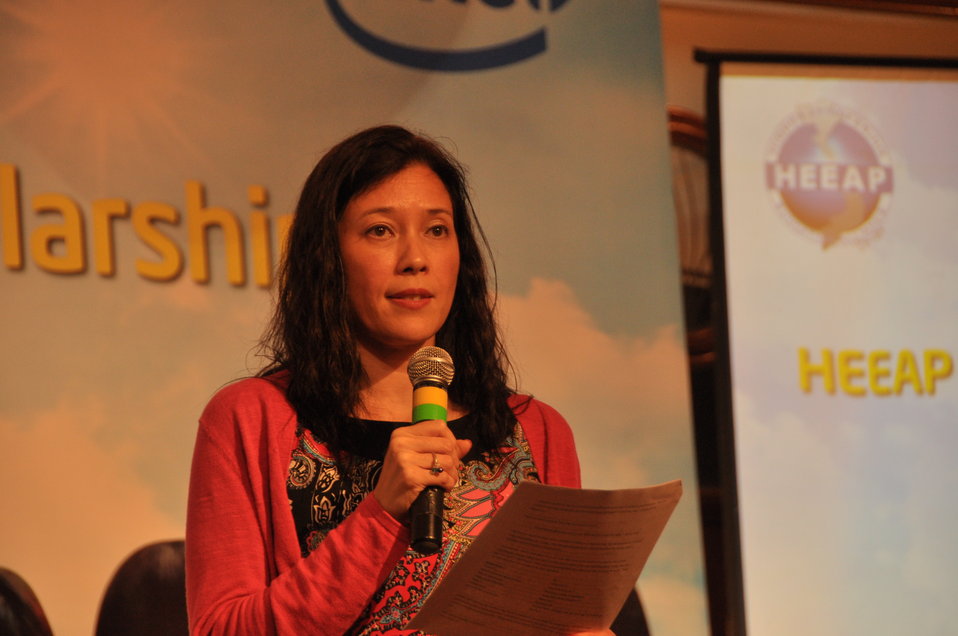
Ms. Sherry Boger, General Manager of Intel Products Vietnam, addresses the awards ceremony

Ho Chi Minh City, January 11, 2013